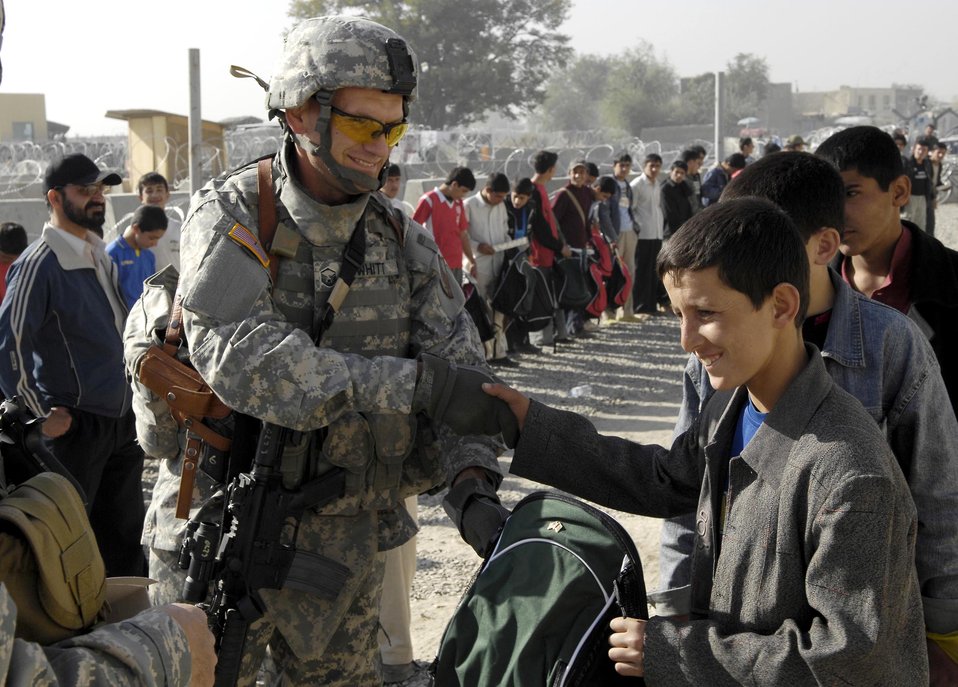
Kabul Airman brings gifts, smiles to local children

Master Sgt. William Whitt passes out soccer balls and gear to local children from the Kabul Youth Soccer League Oct. 22 outside the gate at Kabul International Airport, Afghanistan. The equipment was donated by businessmen and supporters from Tennessee, Georgia and California. Sergeant Whitt's wife, Lea-Ellen Whitt, was instrumental in the effort in Tennessee.